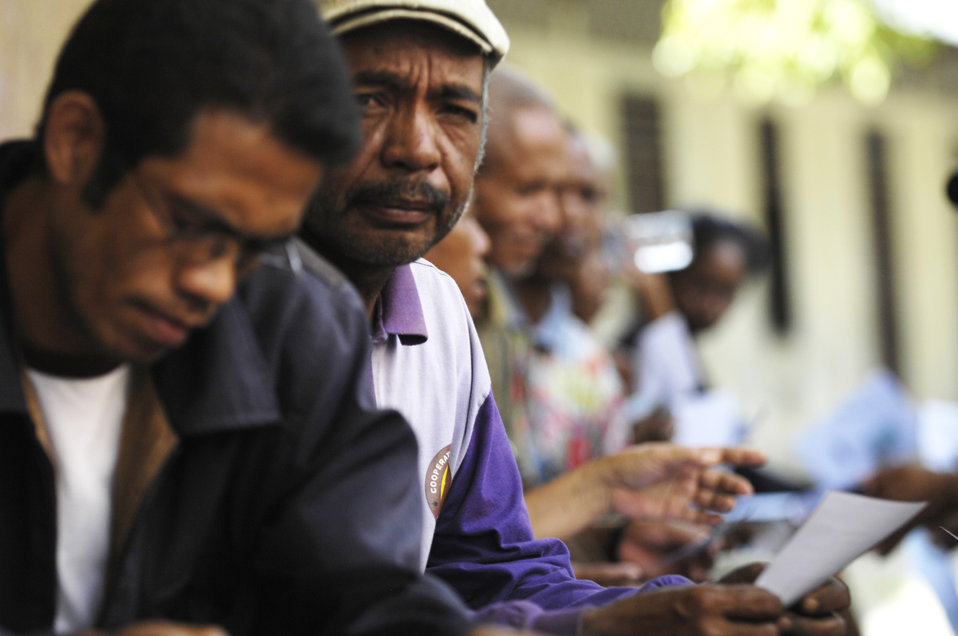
Airmen help hundreds in Timor Leste

An East Timorese man waits outside a makeshift optometry office for a free exam at a clinic set up July 16 in Dili, Timor Leste. More than 300 people were seen on the first of four days at the clinic. East Timorese and U.S. officials set up the clinic as part of Operation Pacific Angel 2009, a Pacific Air Forces humanitarian assistance operation led by 13th Air Force at Hickam Air Force Base, Hawaii.